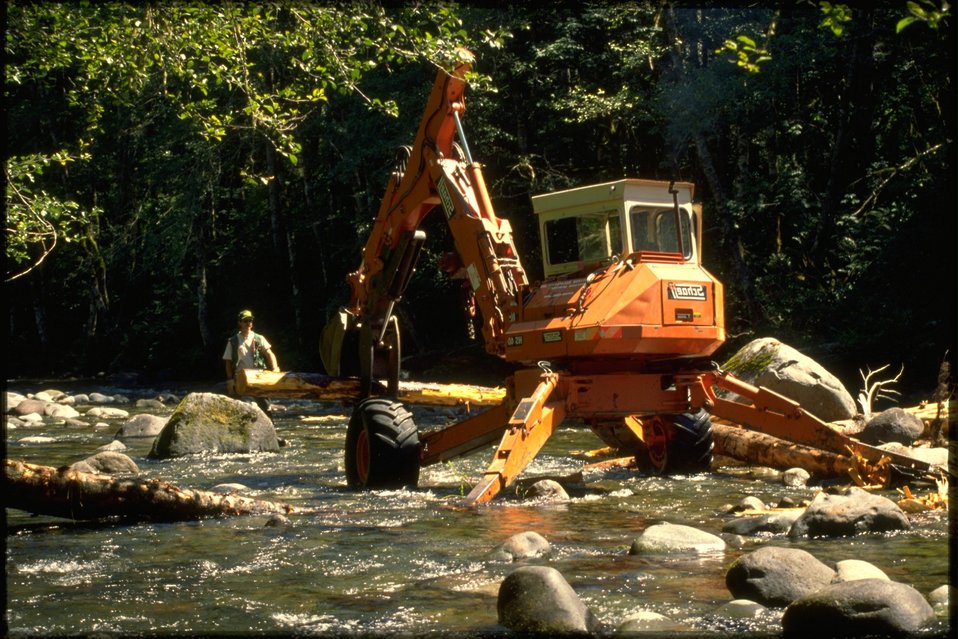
Putting in Stream Structures on the Salmon River at Wildwood.